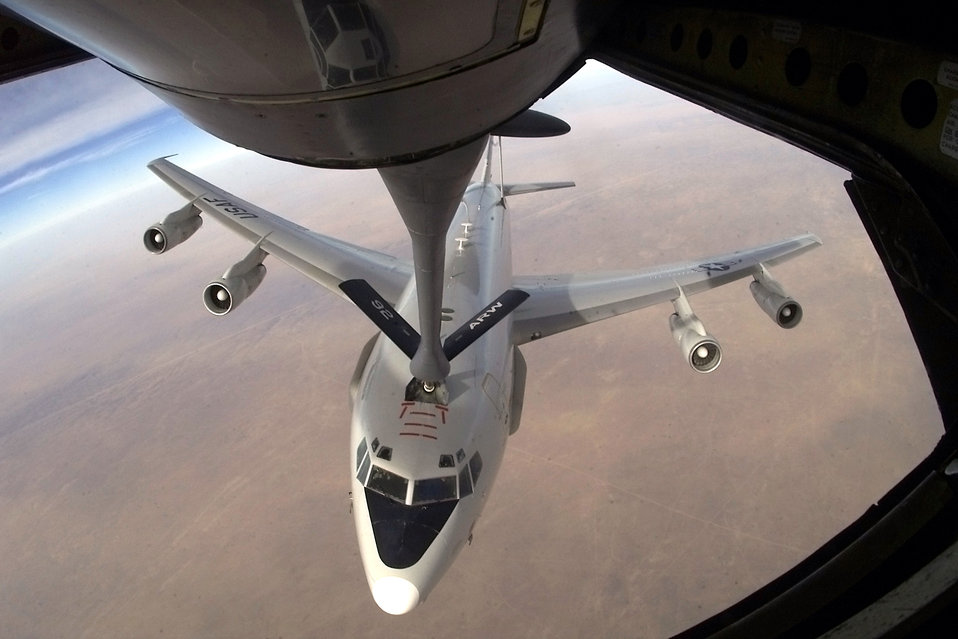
Block 30/35 mod

FILE PHOTO -- A KC-135 Stratotanker from Fairchild Air Force Base, Wash., refuels an E-3 Sentry from Tinker AFB, Okla. This photo gives an aerial view of the E-3 with its new 30/35 modifications and radar improvements.